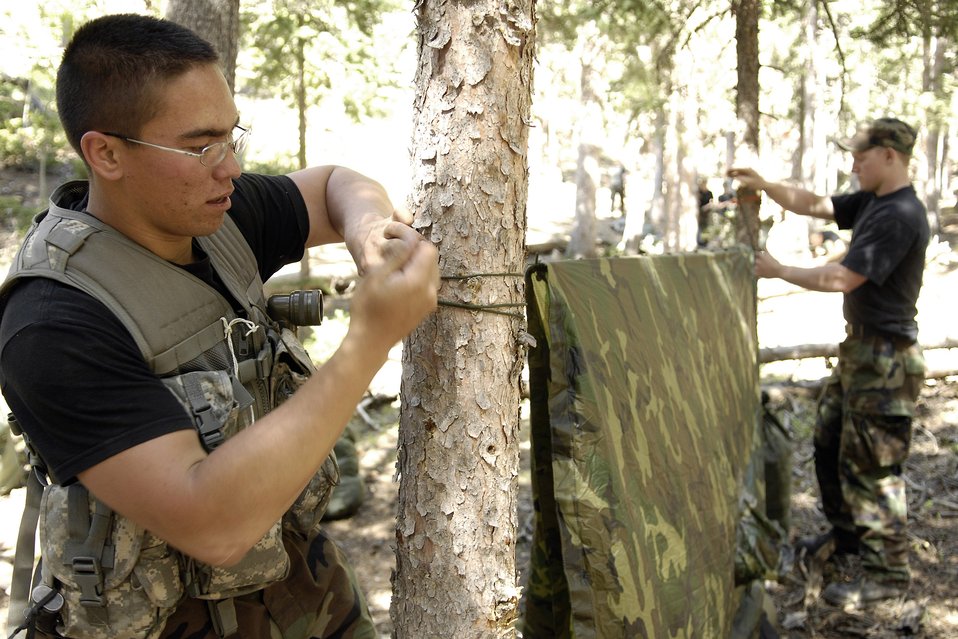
Cadets train in survival, evasion, resistance, escape

Air Force Academy Cadets 2nd Class Jonathan Slater and Harrison Whiting set up a protective shelter between two trees June 9 as they bed down for the night in Saylor Park in Colo. More than 600 cadets are being trained as instructors in survival, evasion, resistance and escape tactics during the 2008 summer period.